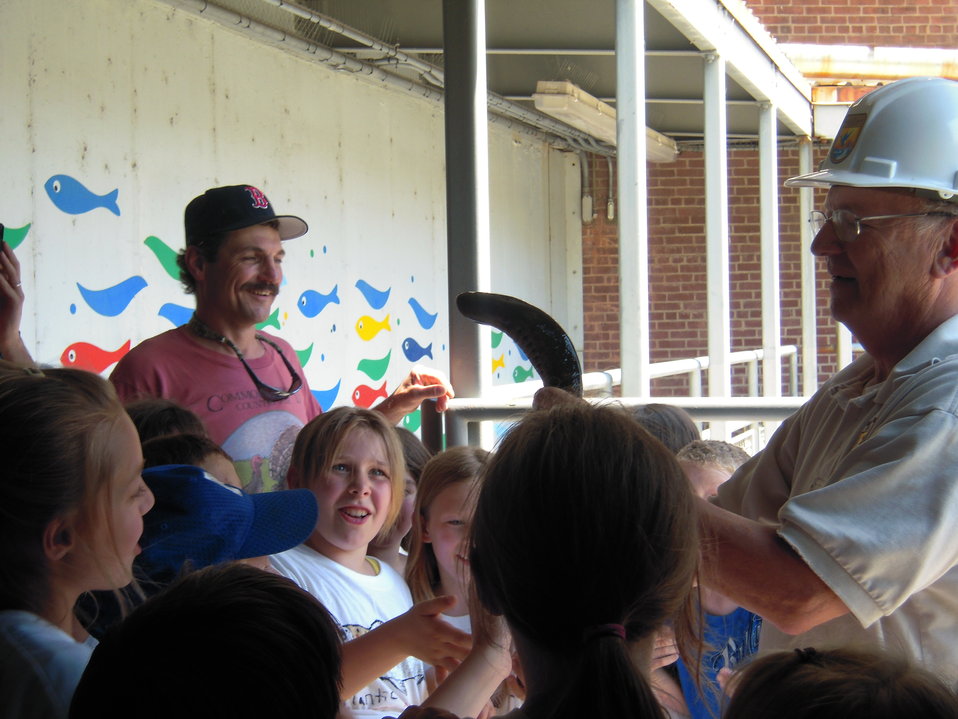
Novak shows sea lamprey